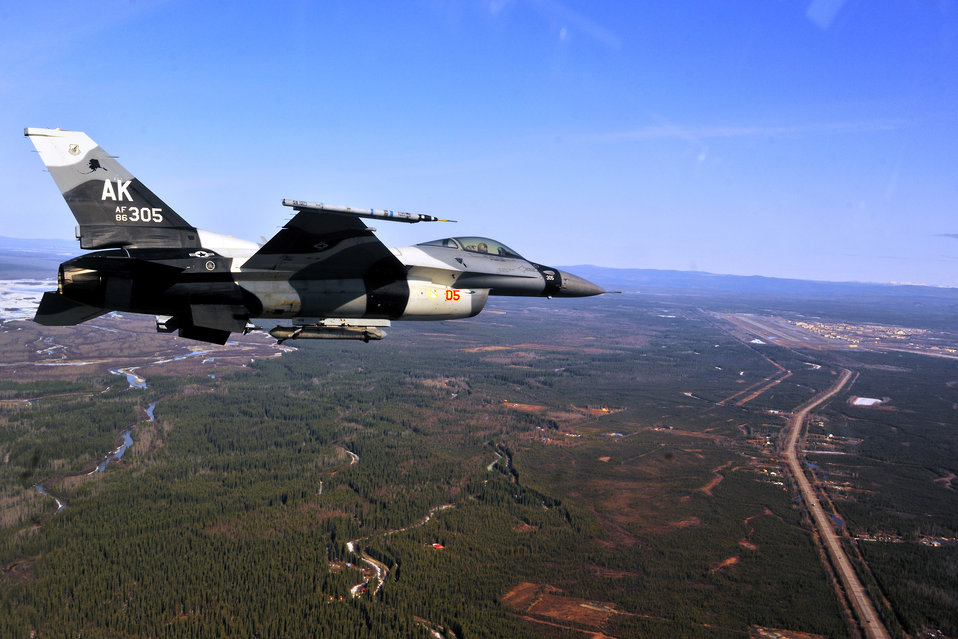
Returning to base

Maj. Mark Schmidt flies an F-16 Fighting Falcon toward Eielson Air Force Base, Alaska, April 29, 2011, during RED FLAG-Alaska. Major Schmidt is a pilot assigned to the 18th Aggressor Squadron.